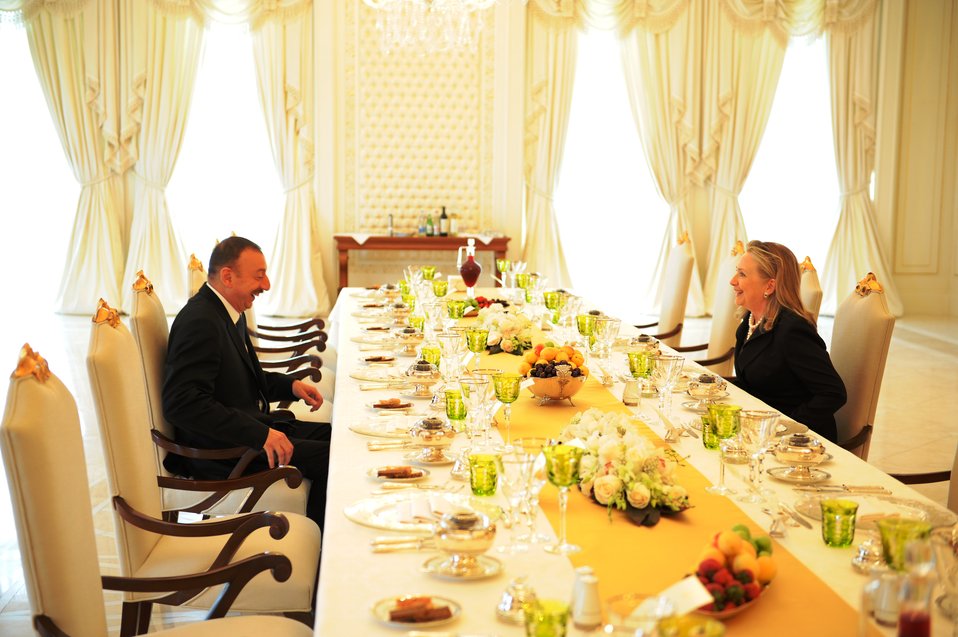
Secretary Clinton Attends a Working Lunch

U.S. Secretary of State Hillary Rodham Clinton attends a working lunch with Azerbaijani President Ilham Aliyev in Baku, Azerbaijan, on June 6, 2012.